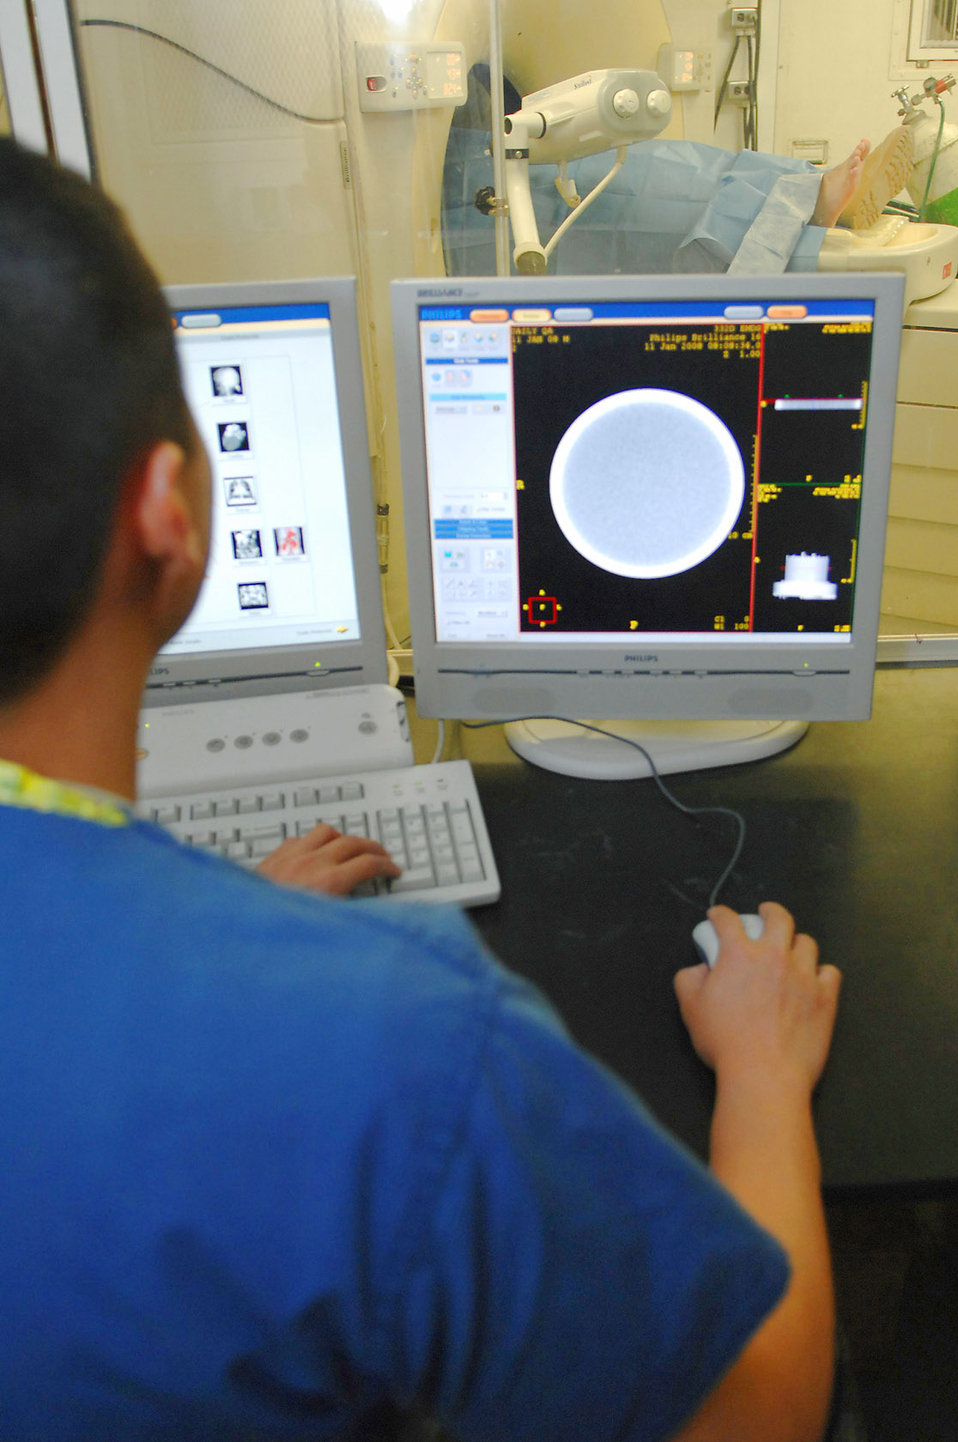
Airmen have X-ray vision

Senior Airman Jason Masiclat performs a CT scan on a trauma patient at the Air Force Theater Hospital Feb. 20 at Balad Air Base, Iraq. Airman Masiclat is a 332nd Expeditionary Medical Support Squadron radiology technologist deployed from Wright Patterson Air Force Base, Ohio.